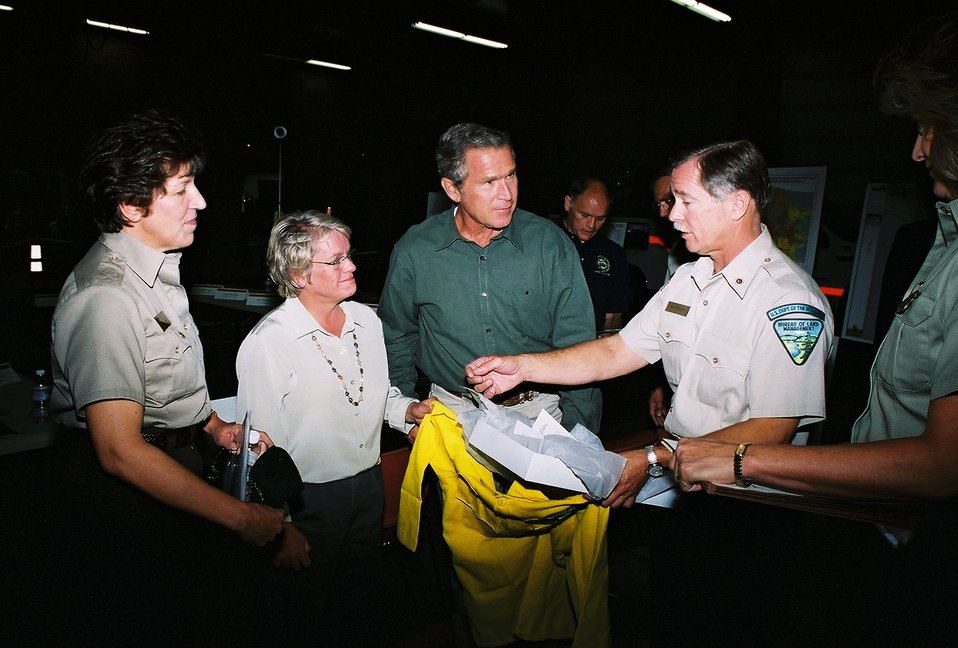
President Bush is presented with mementos from his tour of the Squires fire. (Left to Right) Elaine Brong, BLM Oregon/Washington State Director, Kathleen Clarke, BLM Director, President Bush, and Ron Wenker, BLM Medford District Manager. August 22, 2002 Photo John Craig